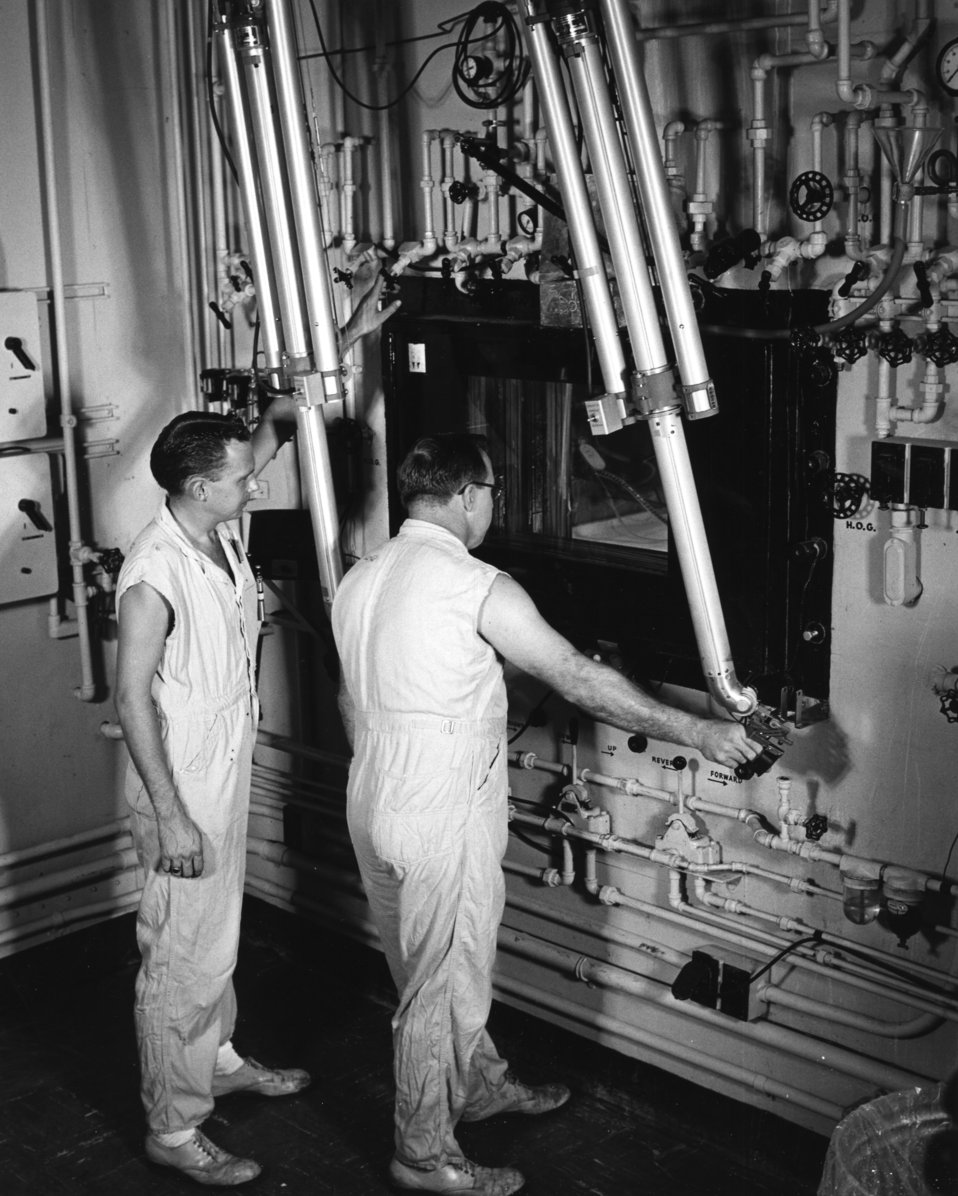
Technicians with Manipulators ORNL

57-1560-FE DOE photo Ed Westcott 1957 Utilizing manipulators which duplicate movement of their hands, technicians at the Atomic Energy Commission's Oak Ridge National Laboratory prepare cobalt-60 teletherapy sources in a 'hot cell' while protected from radiation by thick shielding. Oak Ridge Tennessee